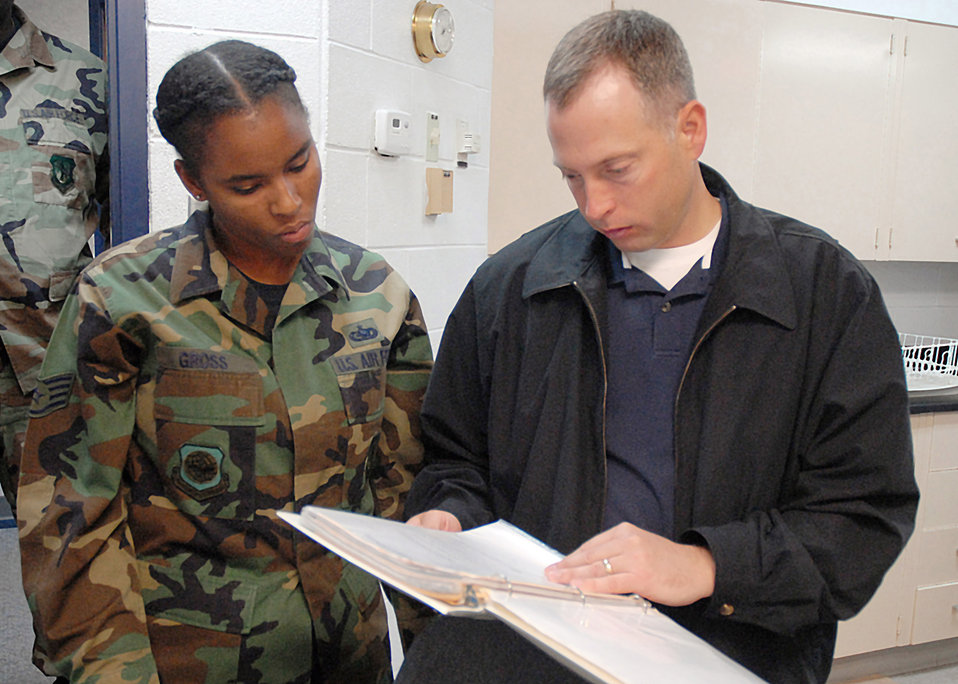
AMC team assesses CAFB for VPP implementation

Philip Driskill reviews a continuity binder with Staff Sgt. Lakisha Gross in the 437th Logistics Readiness Squadron Fuels Management Flight fuels lab. Mr. Driskill, an occupational health and safety specialist from Air Mobility Command, Scott Air Force Base, Ill., is a member of the Voluntary Protection Program assessment team that visited Charleston AFB, S.C. Sergeant Gross is the NCO in charge of the fuels lab. The aim of VPP is to help Airmen take ownership in preventing safety and health mishaps.